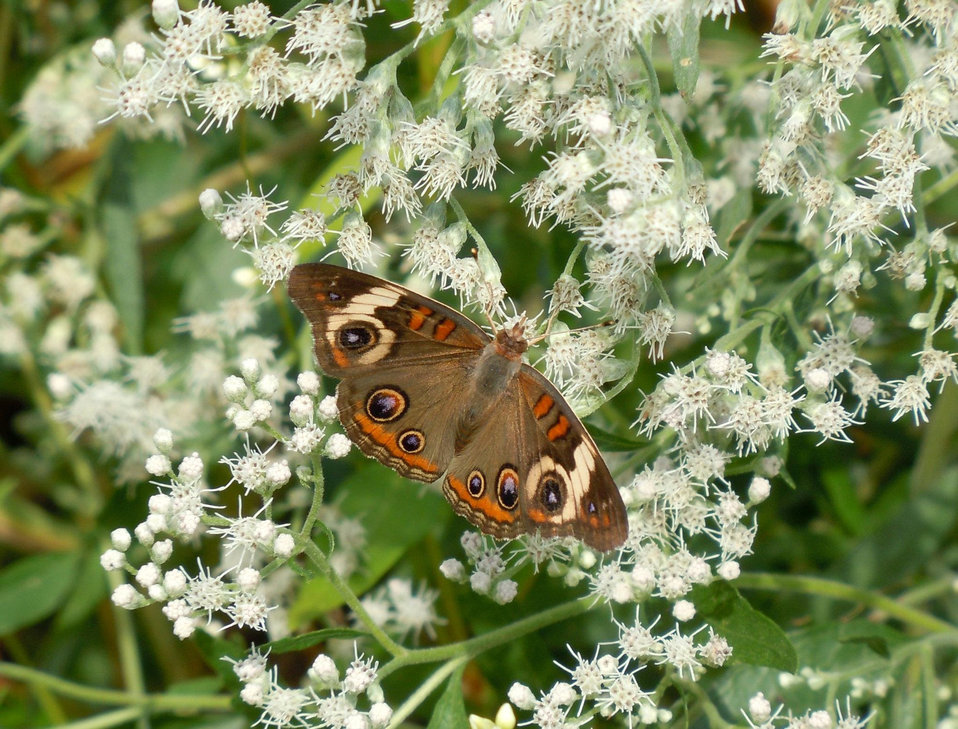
buckeye butterfly on white flowers

Port Louisa National Wildlife Refuge, IA